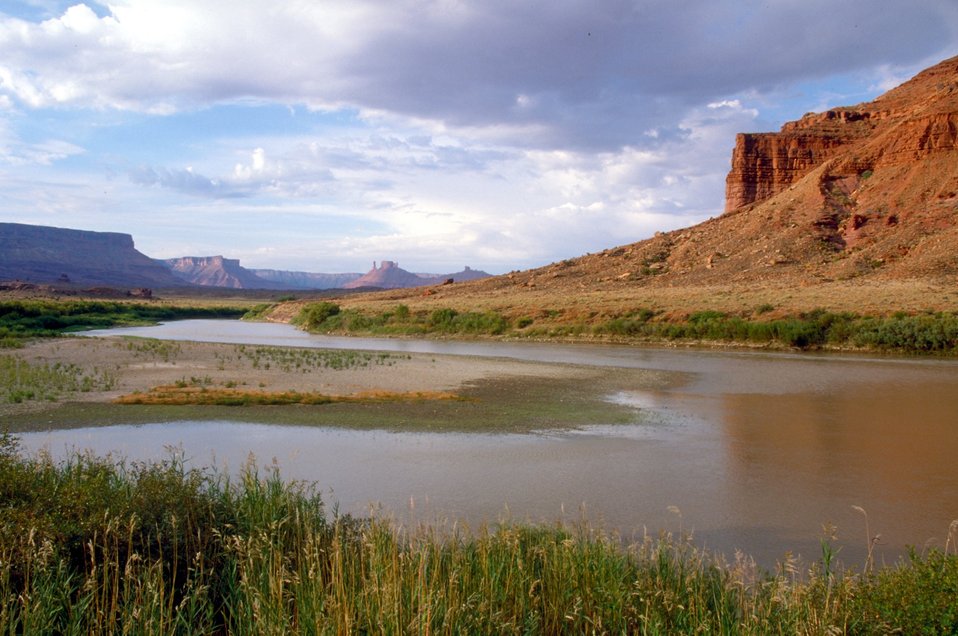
Colorado River near Moab, Utah.